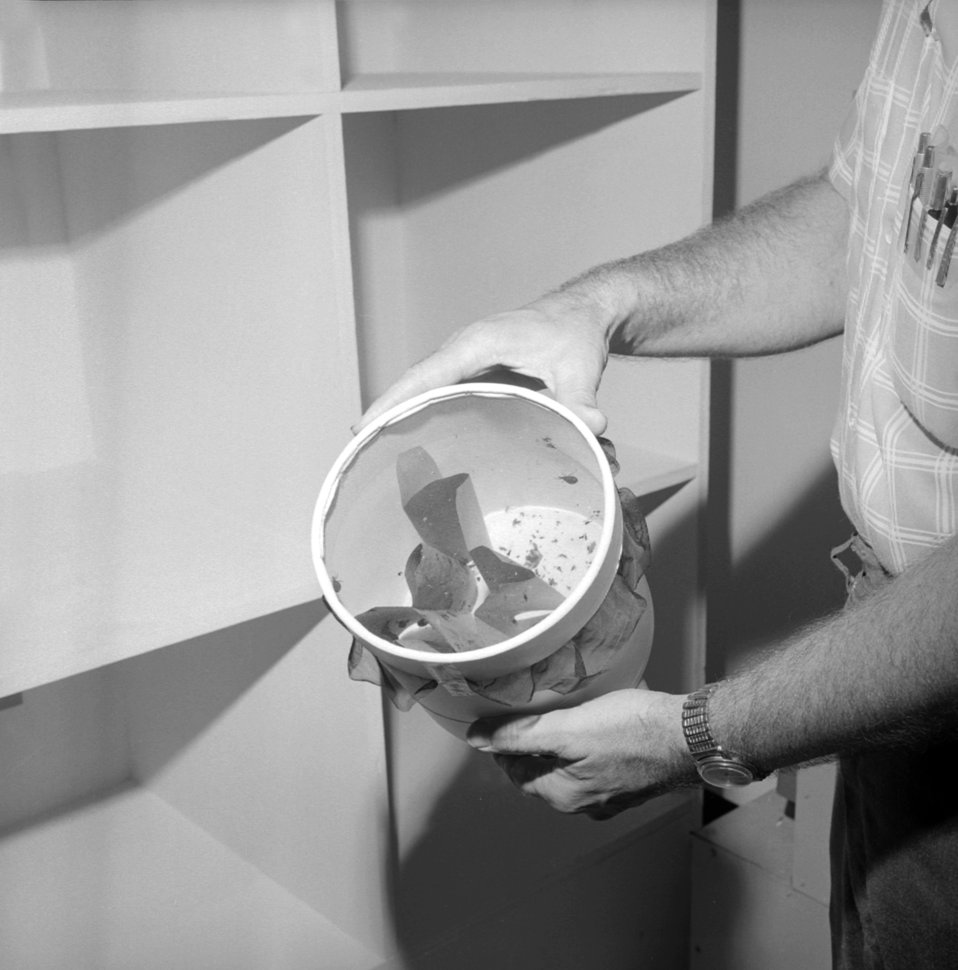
A collection of Triatoma infestans, or 'Kissing Bugs', 'Assassin Bugs', 'Cone-Nose Bugs', the vector for Chagas' Disease.